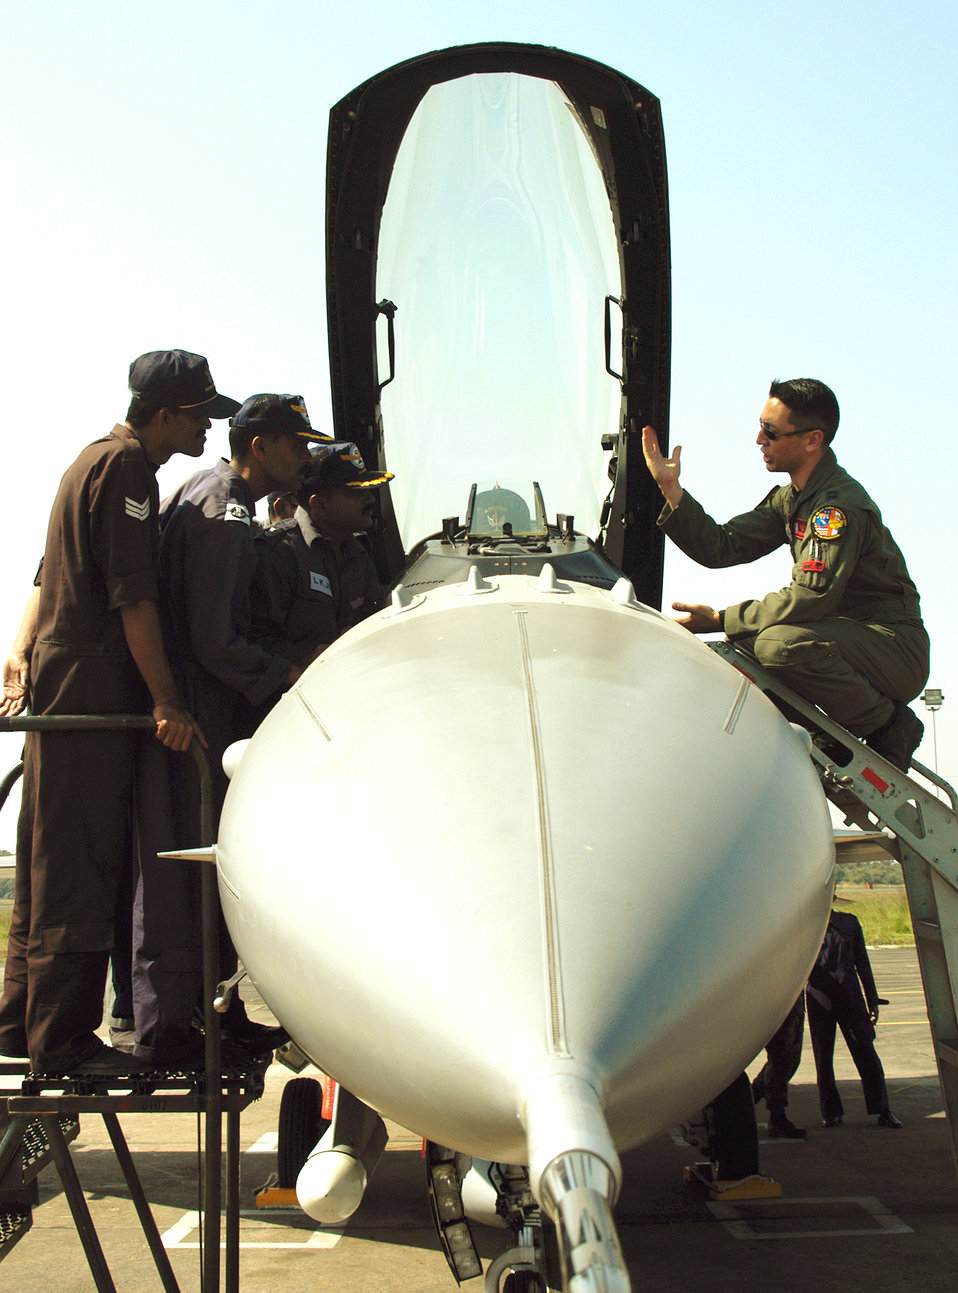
Cope India

KALAIKUNDA AIR STATION, India (AFPN) -- Capt. Kevin Jones gives a cockpit tour to Indian Air Force airmen during Cope India 2006. Currently, the U.S aircraft have flown 113 sorties with the Indian air force. Captain Jones is an F-16 Fighting Falcon pilot from the 13th Fighter Squadron, Misawa Air Base, Japan.